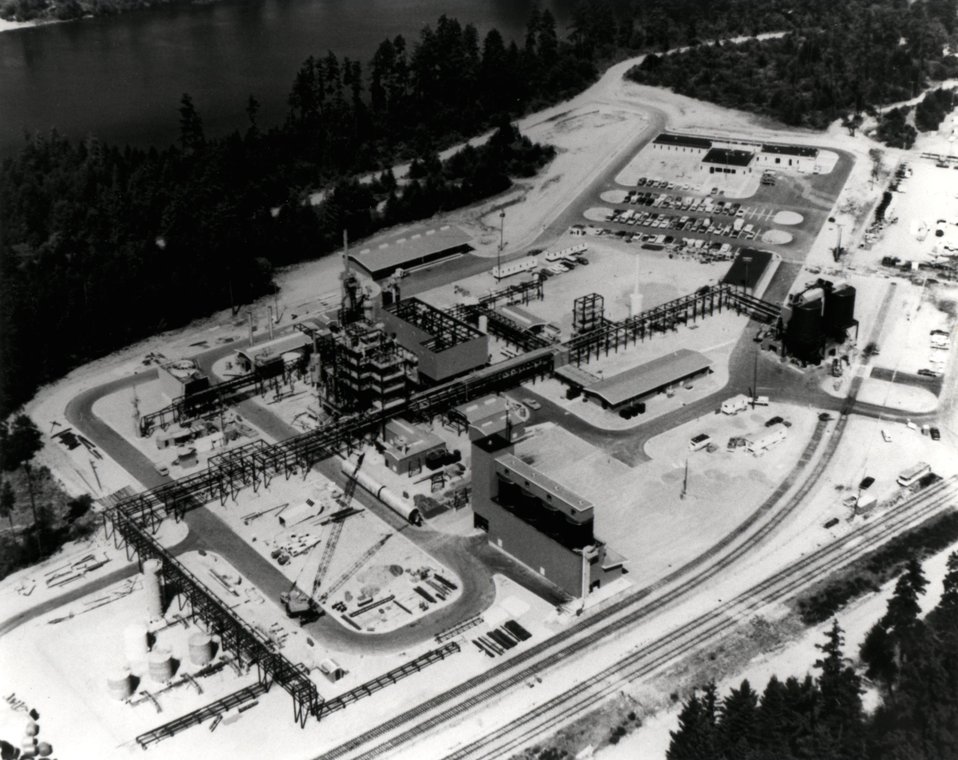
Aerial view of the U.S. Department of Energy's Solvent Refined Coal (SRC) Pilot Plant.